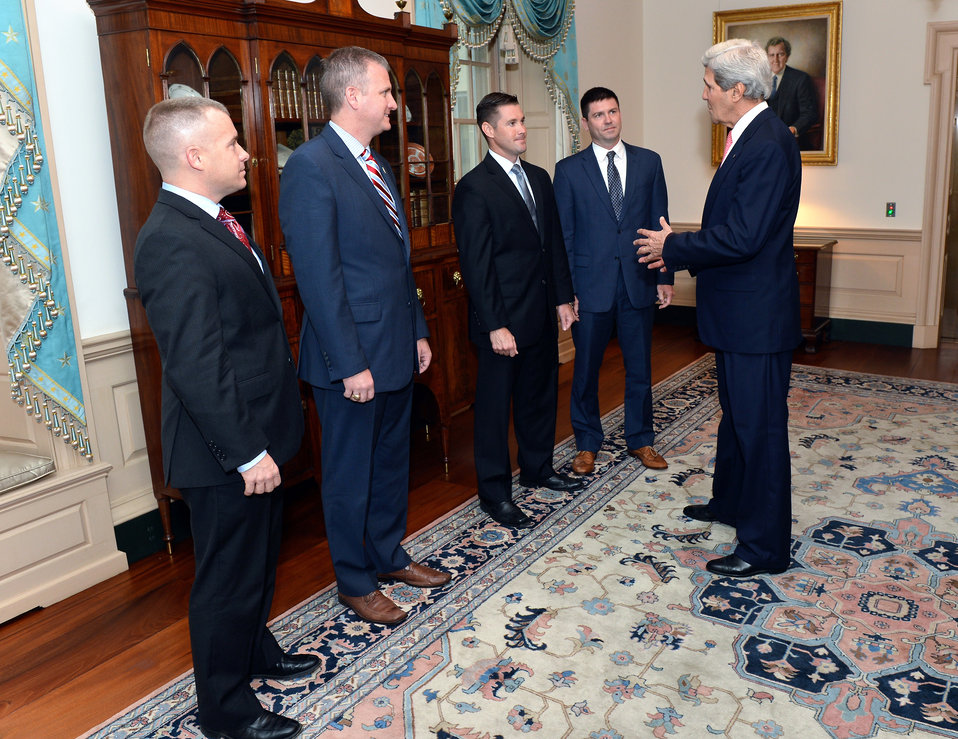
Secretary Kerry Chats With Departing U.S. Air Force Fellows

U.S. Secretary of State John Kerry chats with departing U.S. Air Force Fellows at the U.S. Department of State in Washington, D.C., on May 29, 2014.